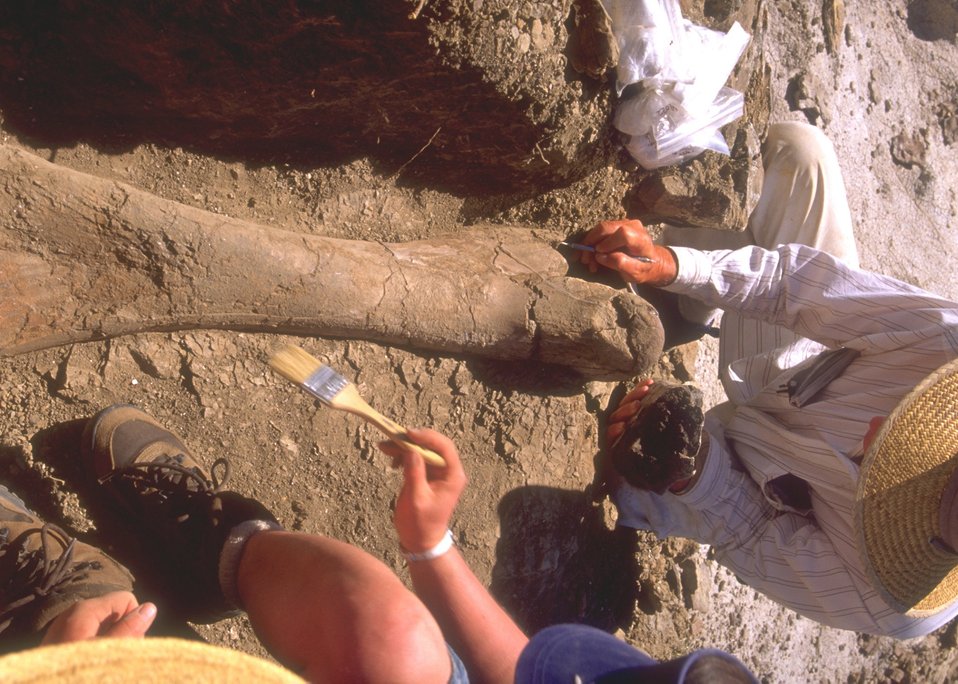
Paleontologist working a dig for dinosaur bones, Lance Creek Fossil Area, Newcastle Field Office.